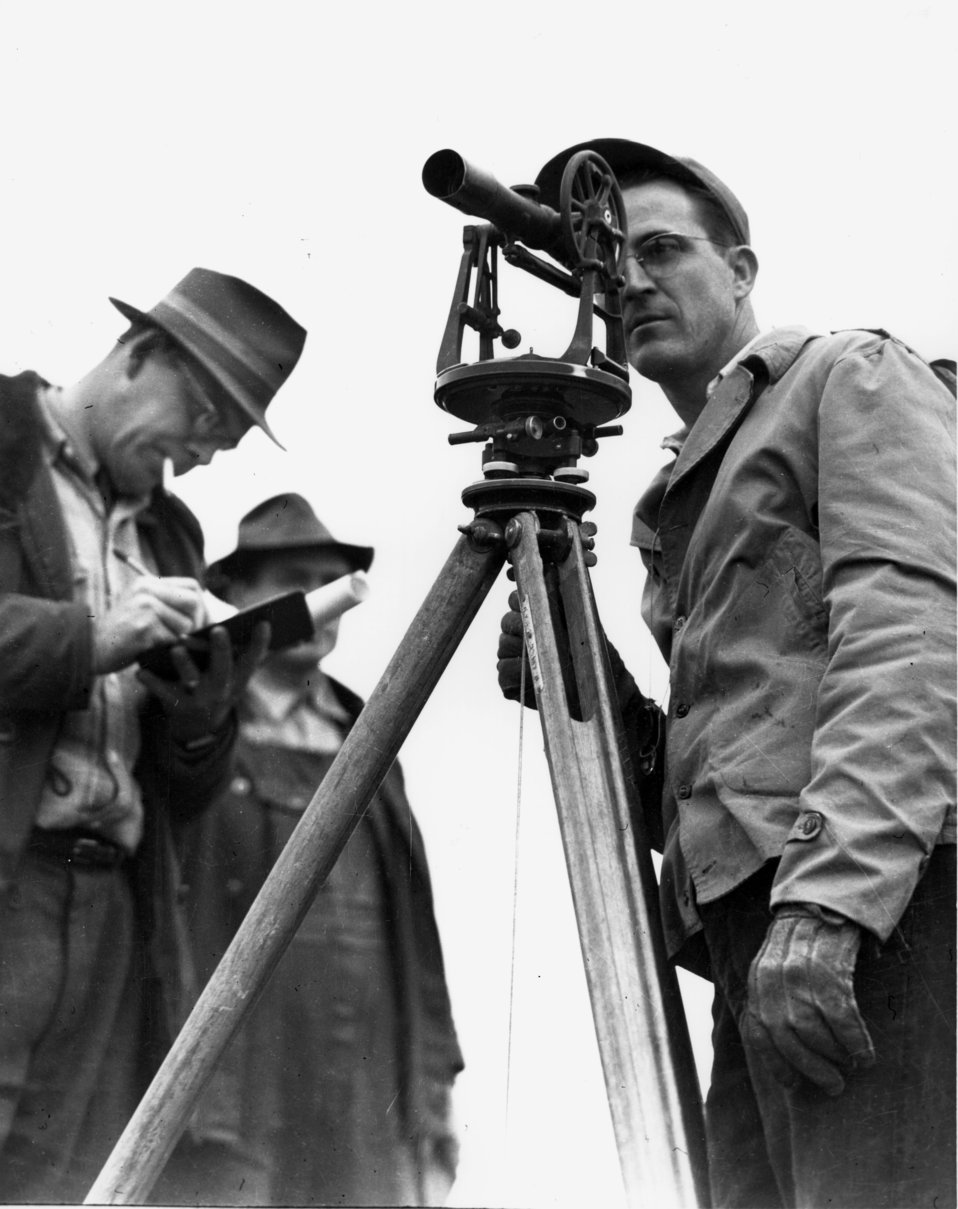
Roane Anderson Co. Engineering Department Oak Ridge

PRO255 DOE photo Ed Westcott 1-13-1945 Oak Ridge Tennessee